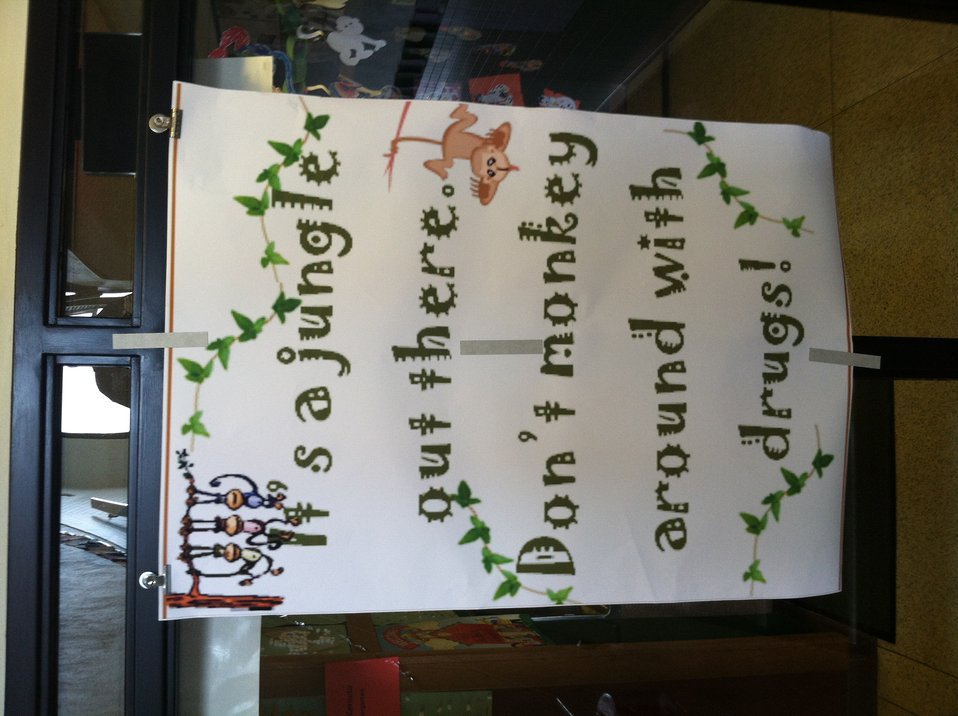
Poster Contest NDFW 2013

Alverton, Penn., Southmoreland Primary Center held a 'Jungle-themed' poster contest during its NDFW 2013 events.